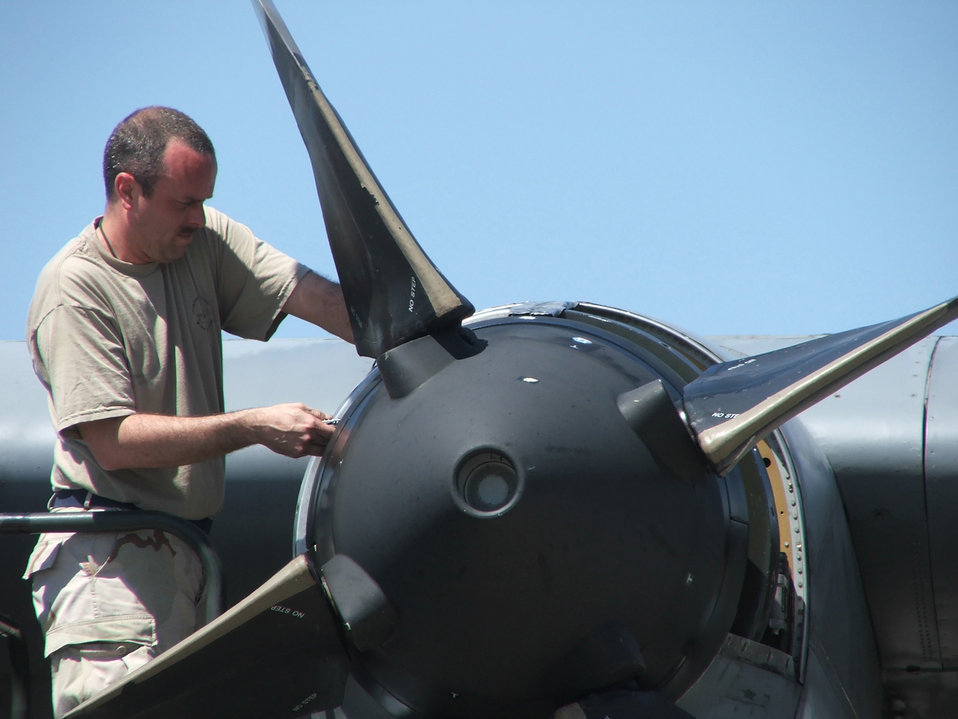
Checkin' before changin'

KARSHI-KHANABAD AIR BASE, Uzbekistan -- Tech. Sgt. Brian Whitt works on a C-130 Hercules engine as he and other maintainers prepare to do a propeller change here April 16. He is a C-130 engine mechanic with the 774th Expeditionary Airlift Squadron and is deployed from the Delaware Air National Guard at New Castle.